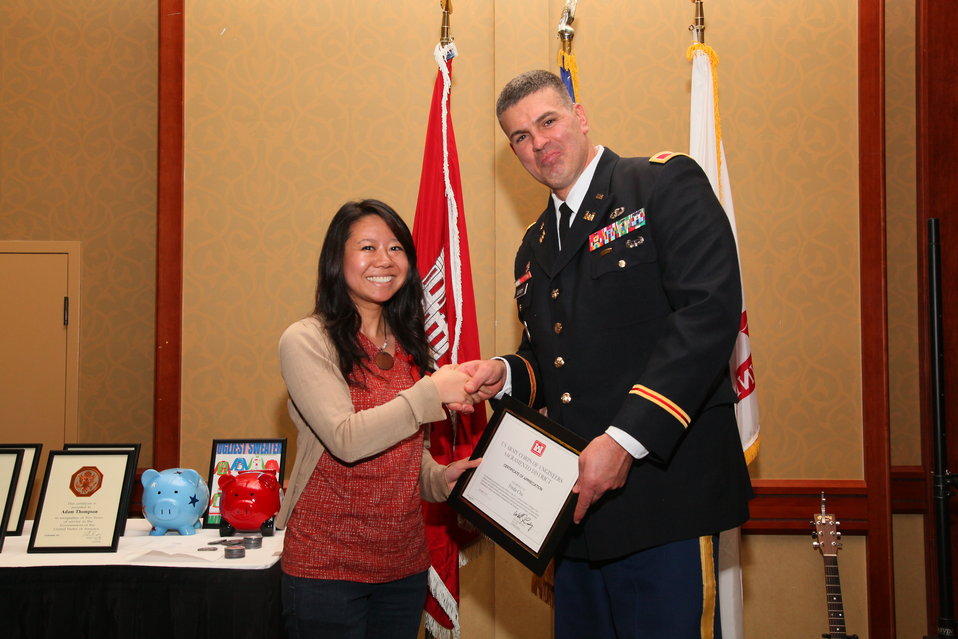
Sacramento District Holiday Party 2011